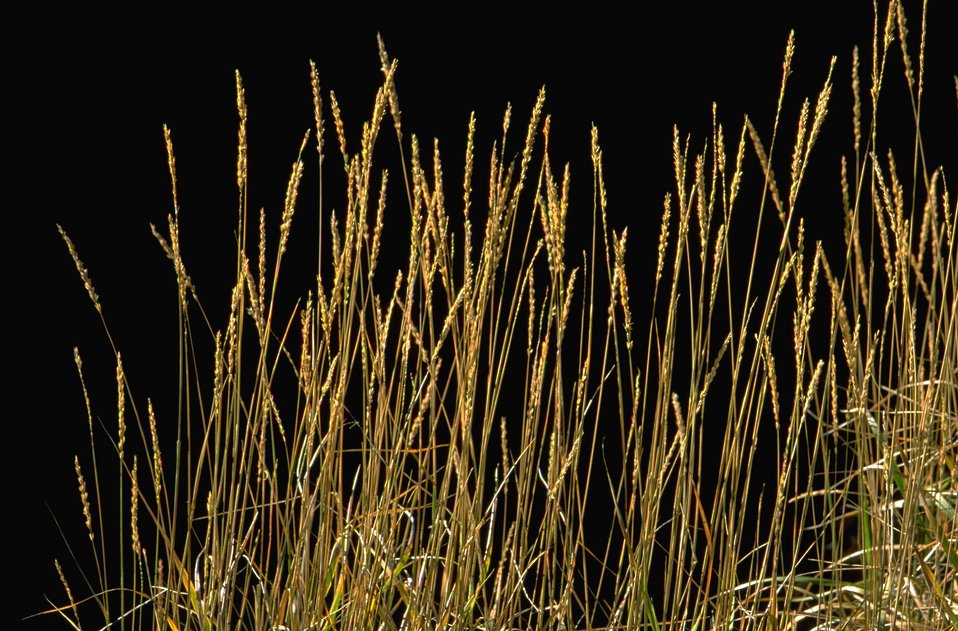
Grass, somewhere in the Dillon Field Office area